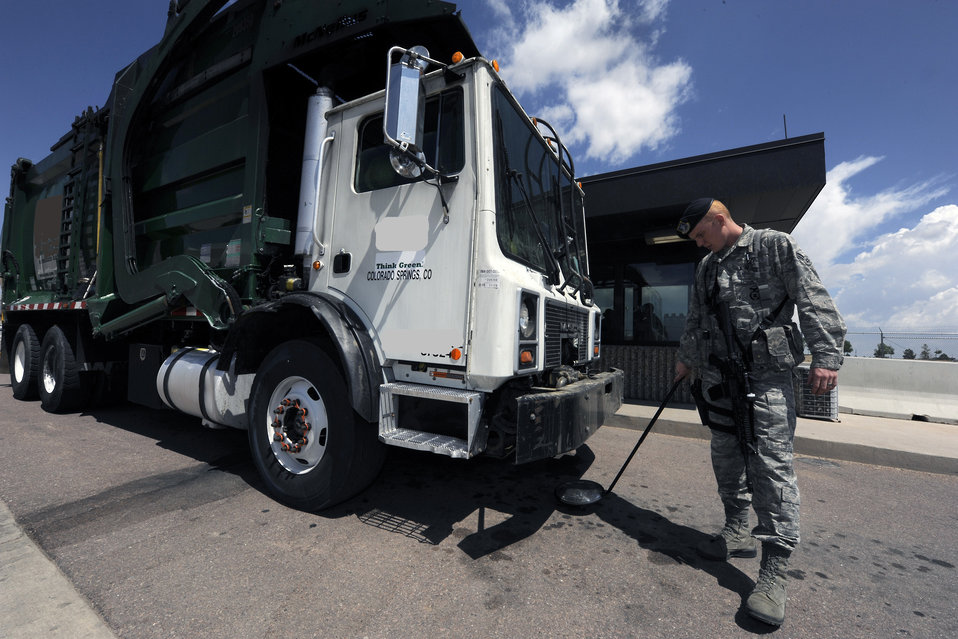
Schriever SFS training

SCHRIEVER AIR FORCE BASE, Colo. -- Airman First Class Michael Pope of the 50th Security Forces Squadron provides security inspections at the west entrapment June 15.